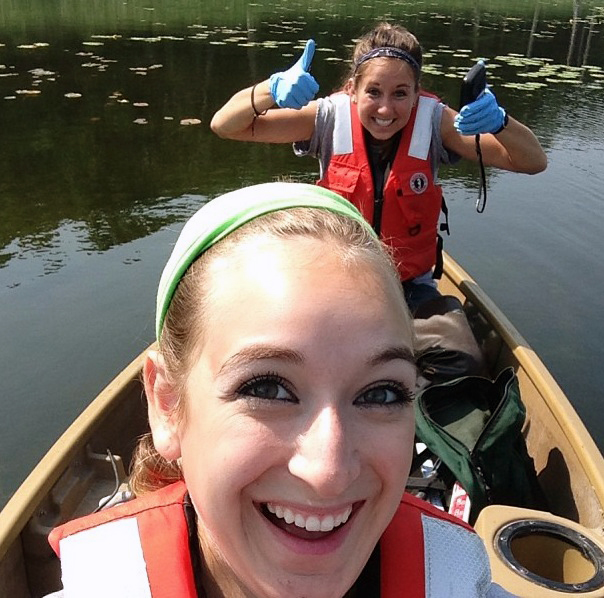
Interns

Two interns ready for another day on the water!